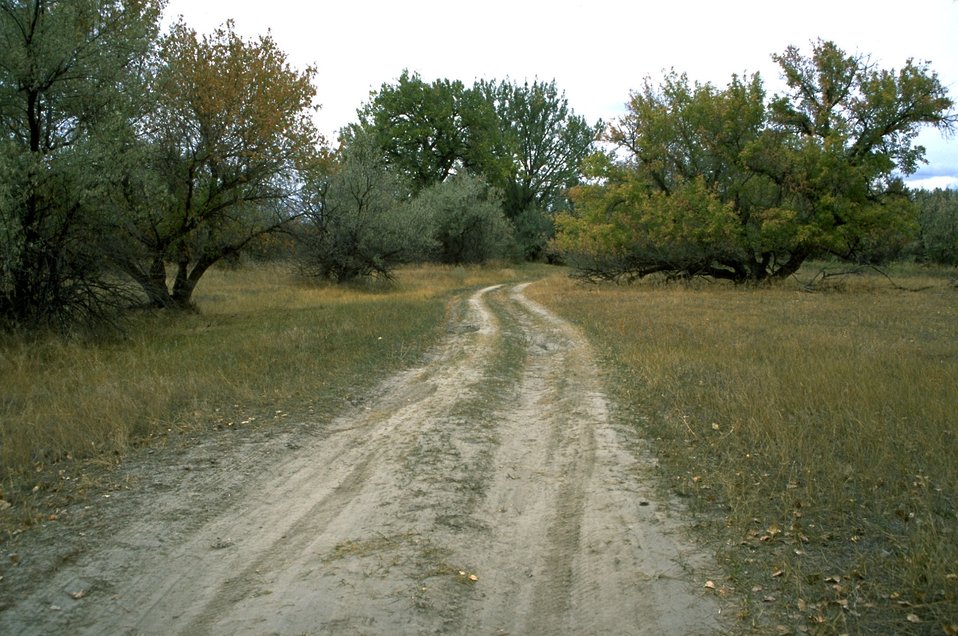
Road into the Howrey Island Recreation Area